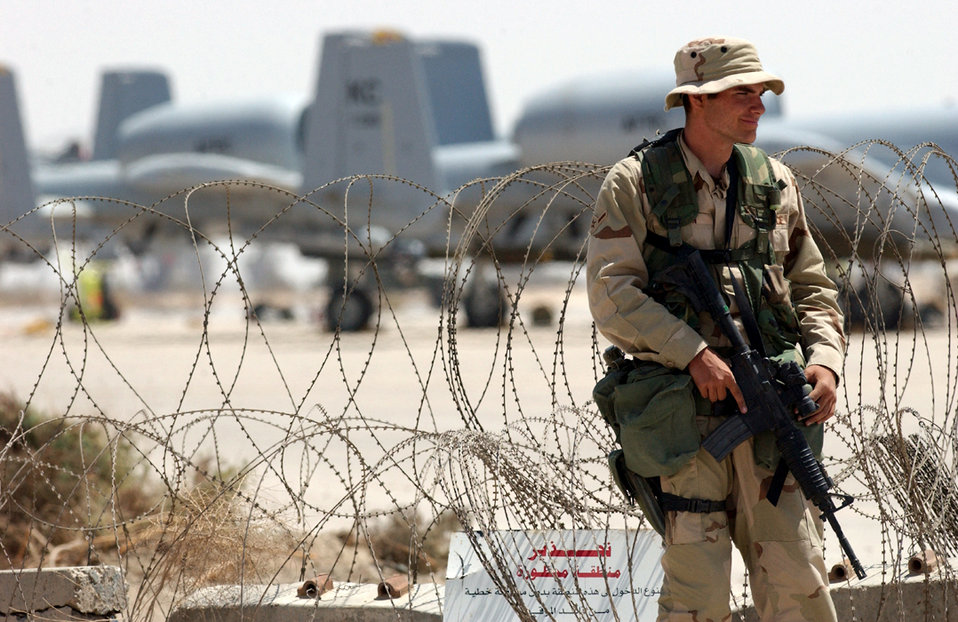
Guard duty

OPERATION IRAQI FREEDOM -- Airman Kellen Grogan of the 407th Expeditionary Security Forces Squadron maintains security at his designated post. Grogan is deployed to Tallil Air Base in southern Iraq from Moody Air Force Base, Ga., to support Operation Iraqi Freedom.